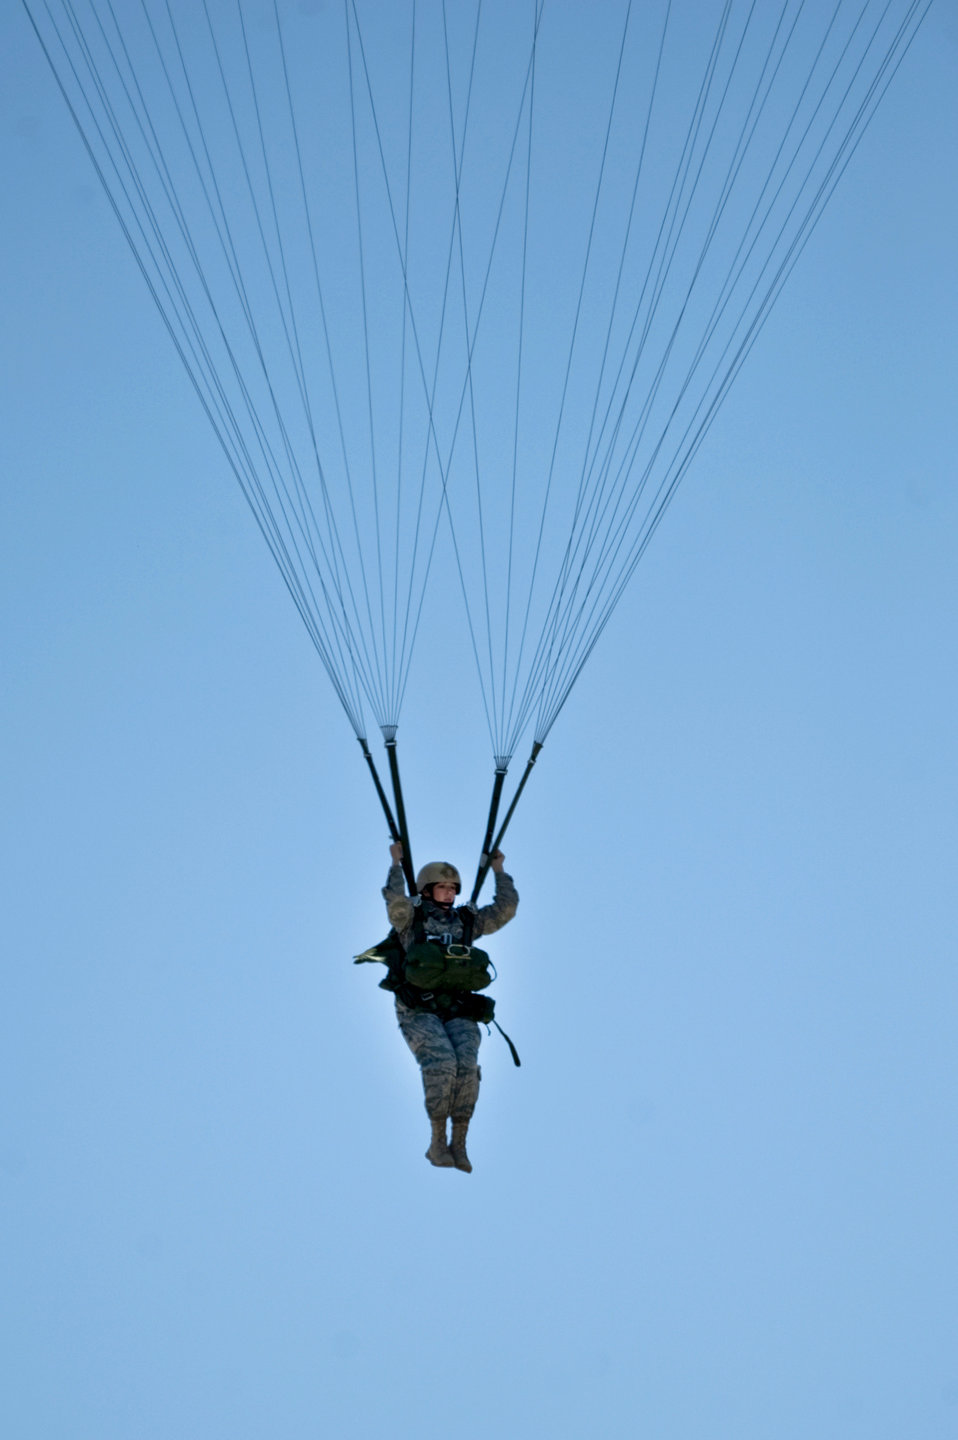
RED HORSE airborne flight

Staff Sgt. Emily Martin prepares to land after jumping from a C-17 Globemaster III May 12, 2011, during a training exercise above Alamo, Nev. Sergeant Martin is an airborne emergency management craftsman assigned to the 820th RED HORSE Squadron.